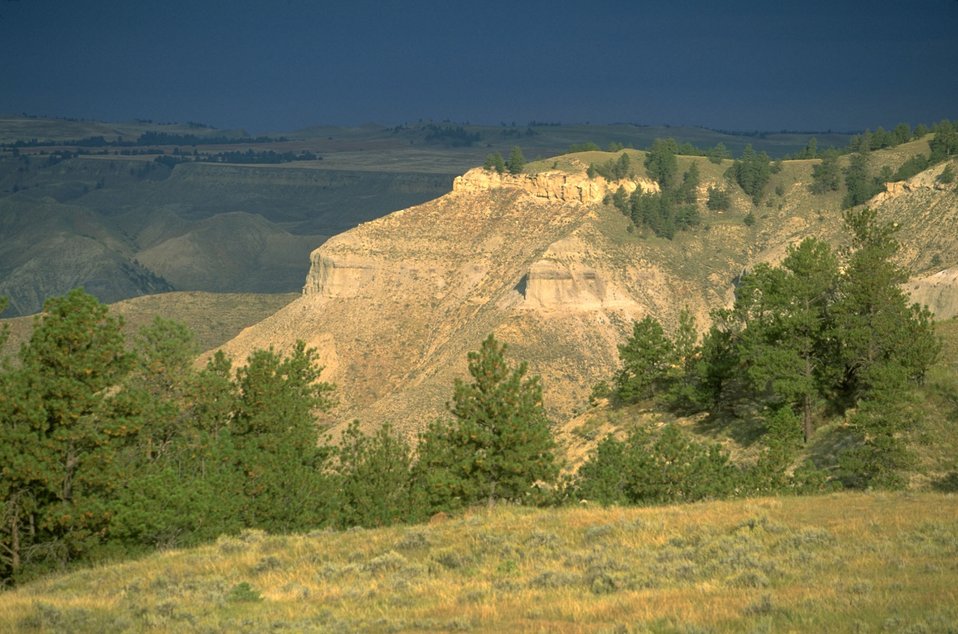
Missouri Breaks scenery in the Upper Missouri River Breaks National Monument